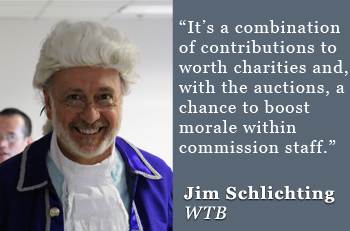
jim-schlichting